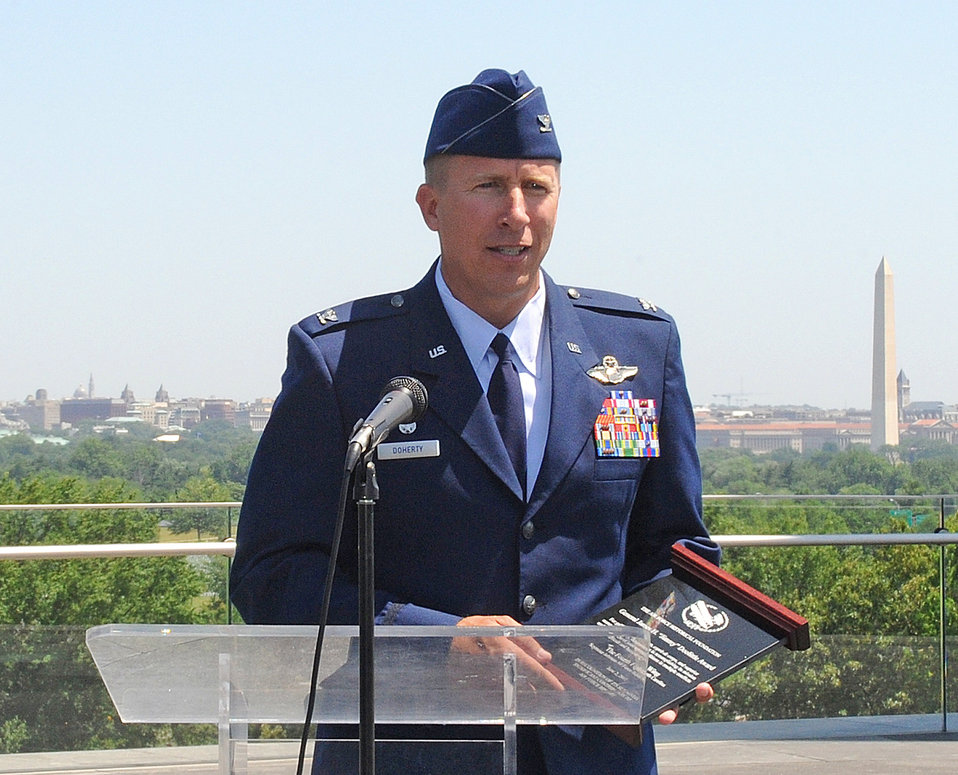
Doolittle Award

Col. Patrick Doherty speaks June 2, 2011, at the Air Force Memorial in Arlington, Va., after accepting the inaugural Doolittle Award on behalf of the 4th Fighter Wing. Colonel Doherty is the commander of the 4th FW.